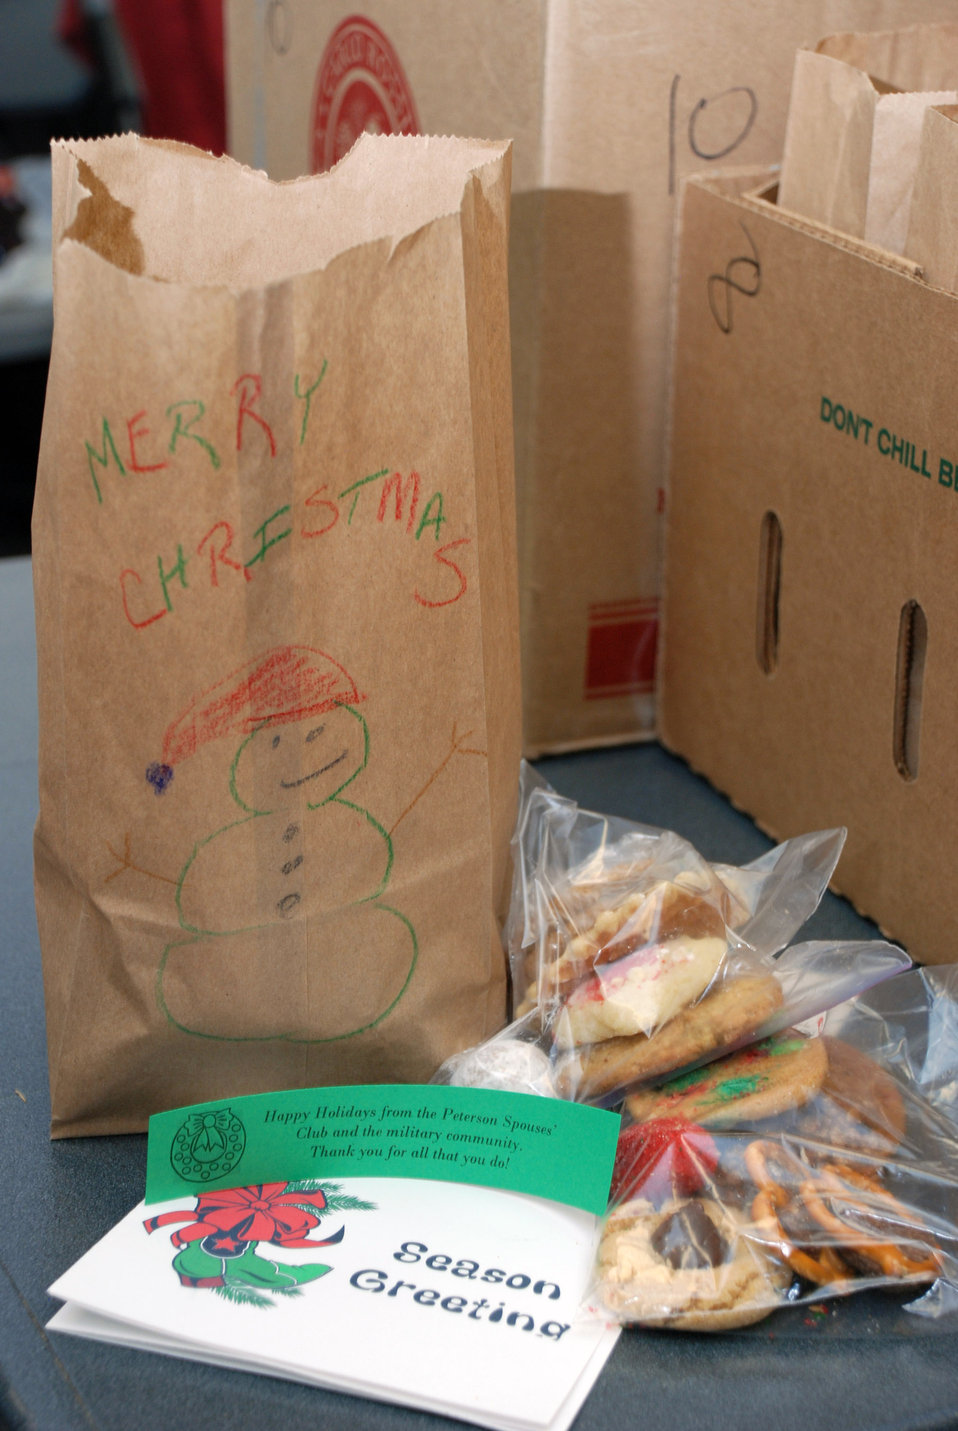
Bakers, baggers deliver sweet treats to dormitory Airmen

A bag of goodies is ready to be delivered to an Airman living in the dormitory Dec. 16 at Peterson Air Force Base, Colo. Volunteers of Cookies for Troops donated, organized, bagged and delivered more than 6,600 cookies to the single dormitory servicemembers. The cookie drive is an annual program sponsored by the Peterson AFB Spouses' Club. The bags were decorated by local school children, families and volunteers.